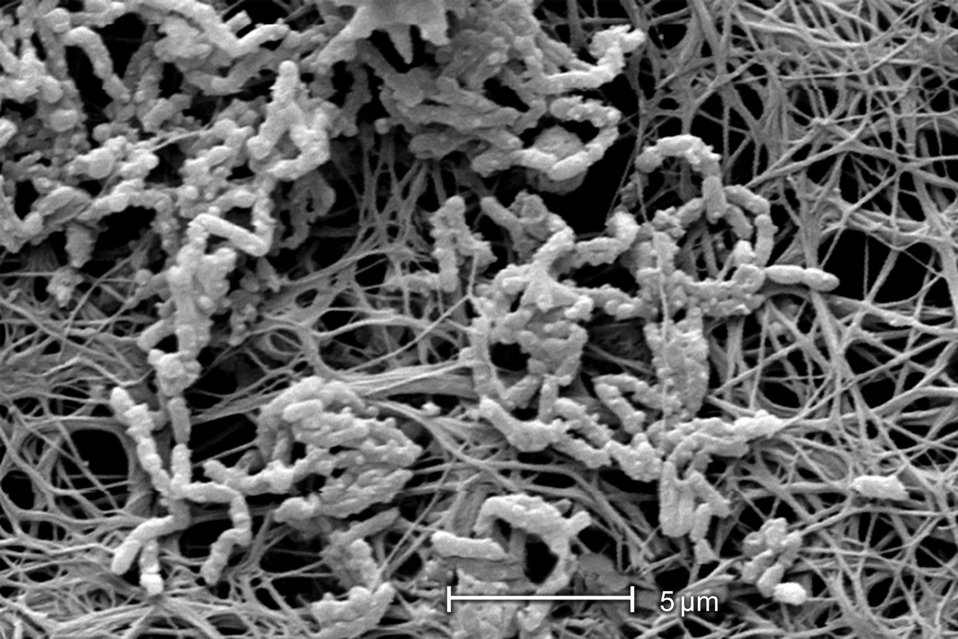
This 2008 scanning electron micrograph (SEM) depicts the lumen of a segment of a central venous catheter removed from an asymptomatic patient. The biofilm contained the rod-shaped bacteria, Alcaligenes xylosoxidans in association with fibrinlike material on the catheter's surface.